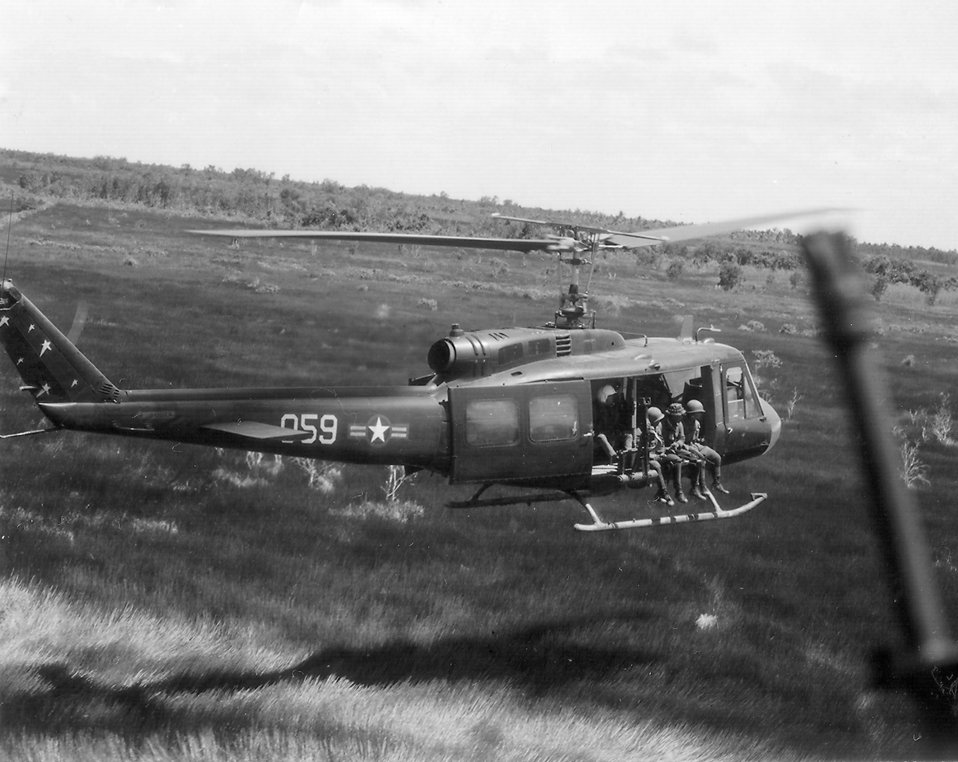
UH-1

1970-80 -- Air Force personnel of the 211th Helicopter Squadron on a combat assault mission in a UH-1 over S.E. Asia.